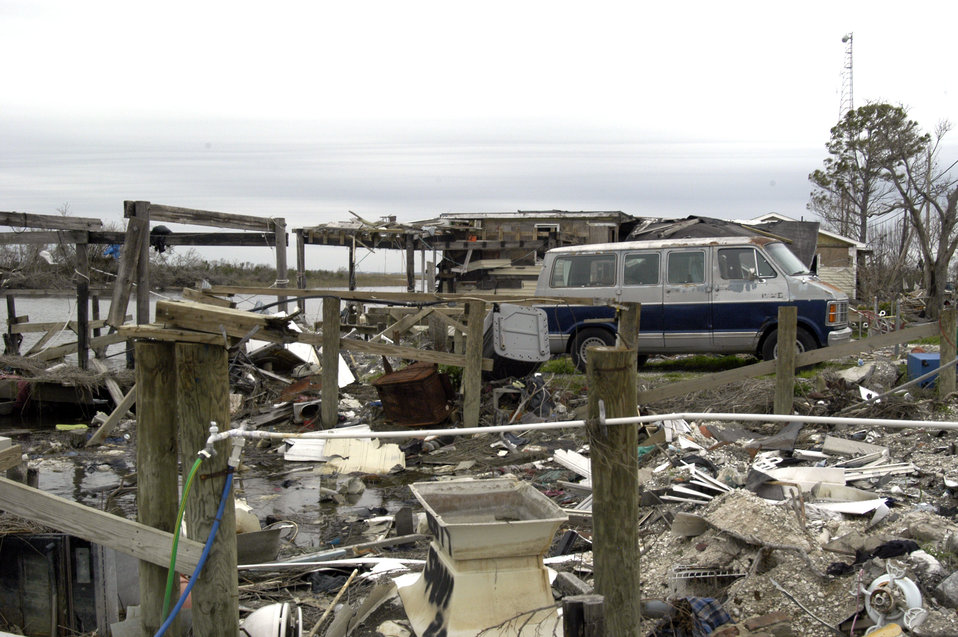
Homes built along the many canals in New Orleans, LA, were washed away by Hurricane Katrina’s 20-foot storm surge that overwhelmed the city’s levees. Hurricane Katrina was the 6th strongest hurricane in U.S. history and the 5th deadliest. Katrina made landfall on Monday morning, August 29, 2005 as a Category 3 hurricane with sustained winds of 125 mph with over a 20-foot storm surge. Katrina caused catastrophic damage over 90 thousand square miles across Louisiana with an estimated $75 billion dollars in damage. The total economic impact to the Gulf Coast was estimated at over $150 billion. 80% of New Orleans, LA, was underwater with some areas more than 20 feet deep. Less than a month later southern Louisiana was struck by a second Category 3 hurricane Rita inflicting more damage in the southwestern areas of Louisiana adding an addition $12 billion worth of damage to the already beleaguered state. The U.S. Army Corps of Engineers (USACE) under the auspices of FEMA was the lead service in providing assistance to the citizens of Louisiana. The U.S. Department of Agriculture (USDA) supplied emergency food aid, emergency loan assistance to farmers and home owners, and USDA personnel from around the nation volunteered their time and muscle to aid in the recovery operations.